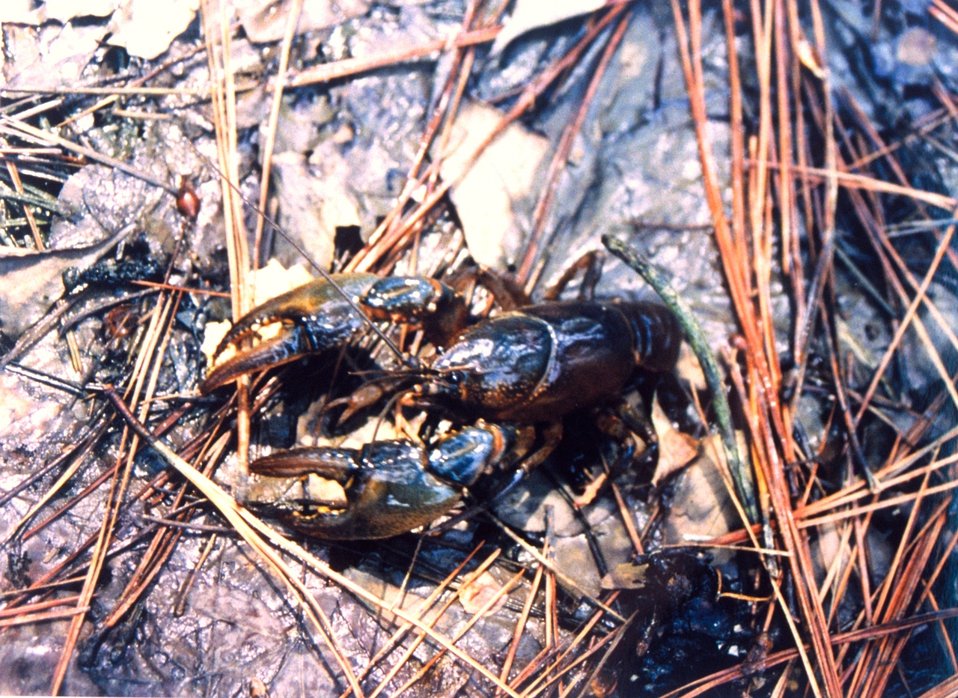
Crayfish found in a salt water pond near the Patuxent River.